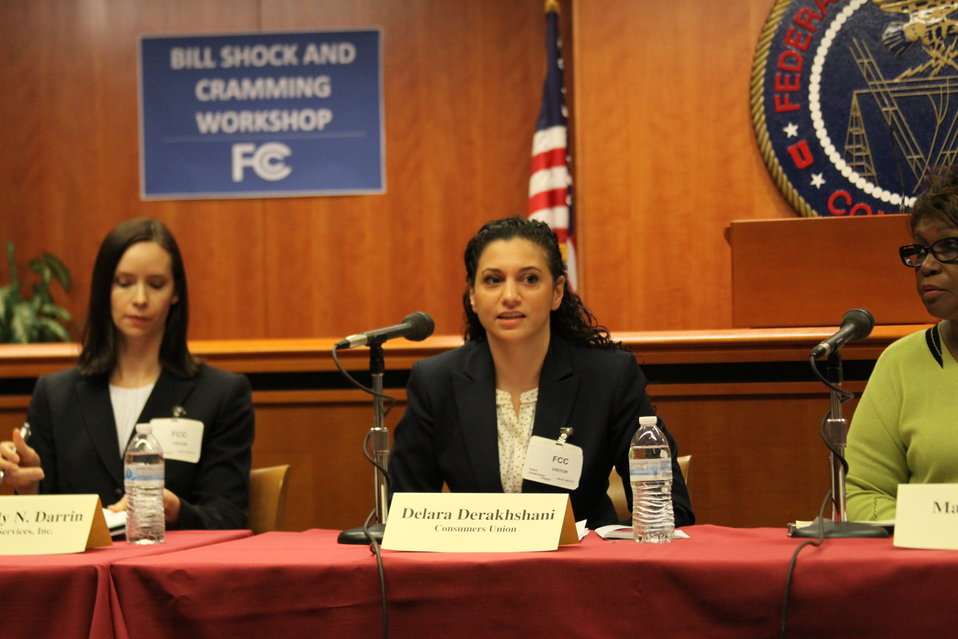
April 17, 2013 Bill Shock and Cramming Workshop